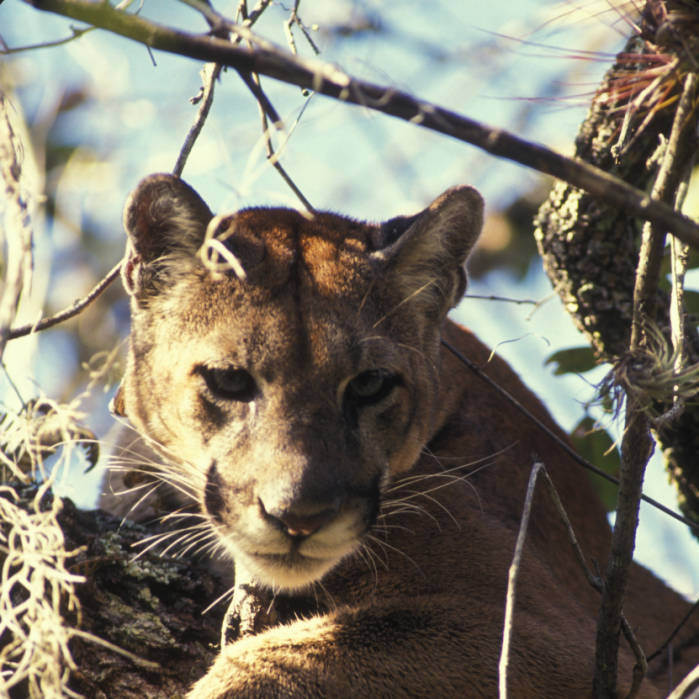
Florida panther, Florida Panther National Wildlife Refuge